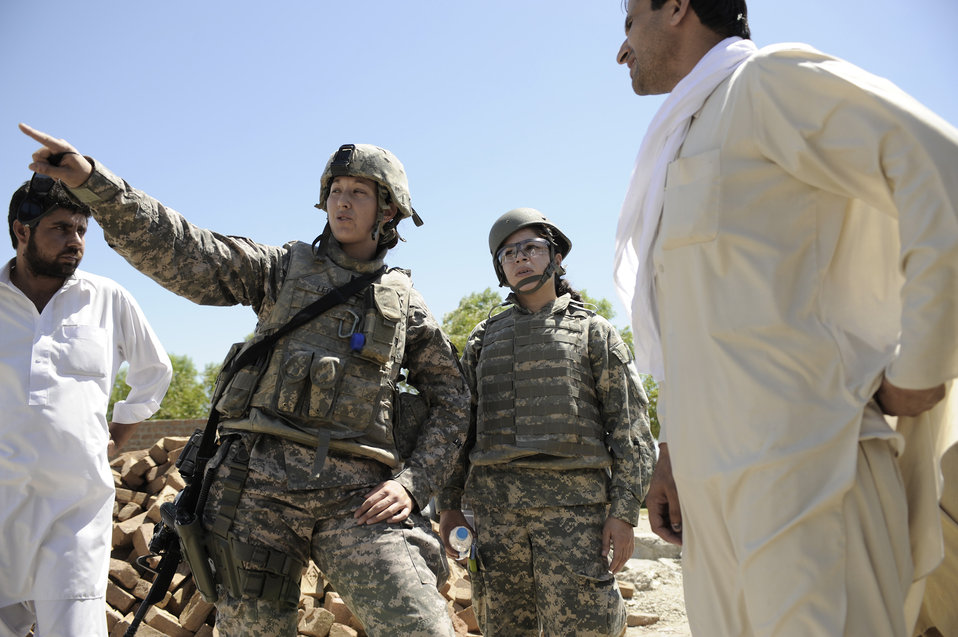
Afghanistan's future foundation

Capt. Elisabeth Leon, lead engineer for the Nangarhar Provincial Reconstruction Team, Nangarhar Province, Afghanistan, speaks with a local contractor as part of a quality assurance inspection of a development site in Jalalabad May 30. The PRT is responsible for development and reconstruction projects in Nangarhar Province. The projects are built by local and contractors and are designed to improve the livelihood of the people living in the area. Captain Leon is deployed from Wright-Patterson Air Force Base, Ohio.